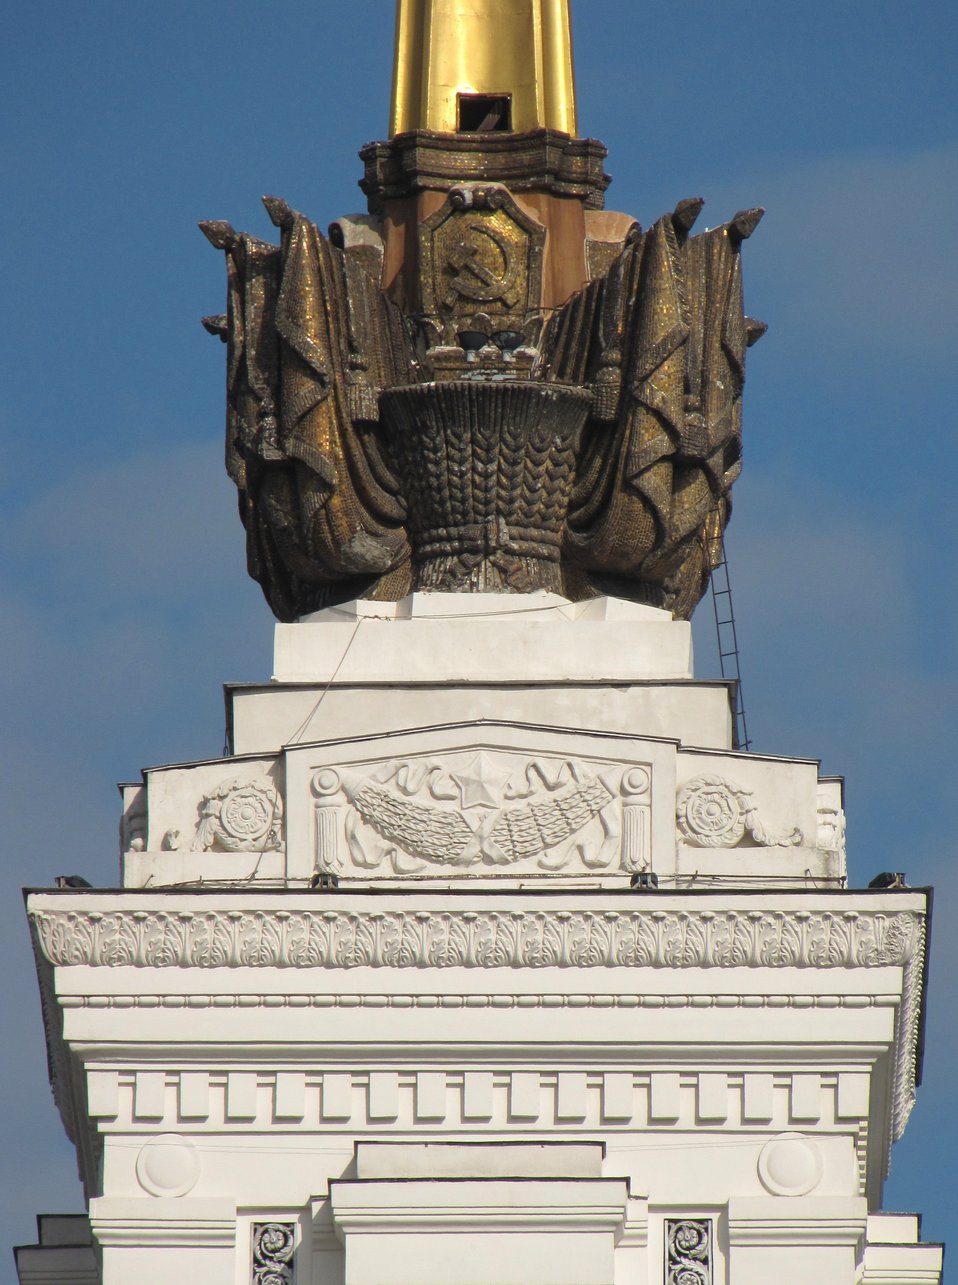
Русский: изящно декорированная деталь главного павильона